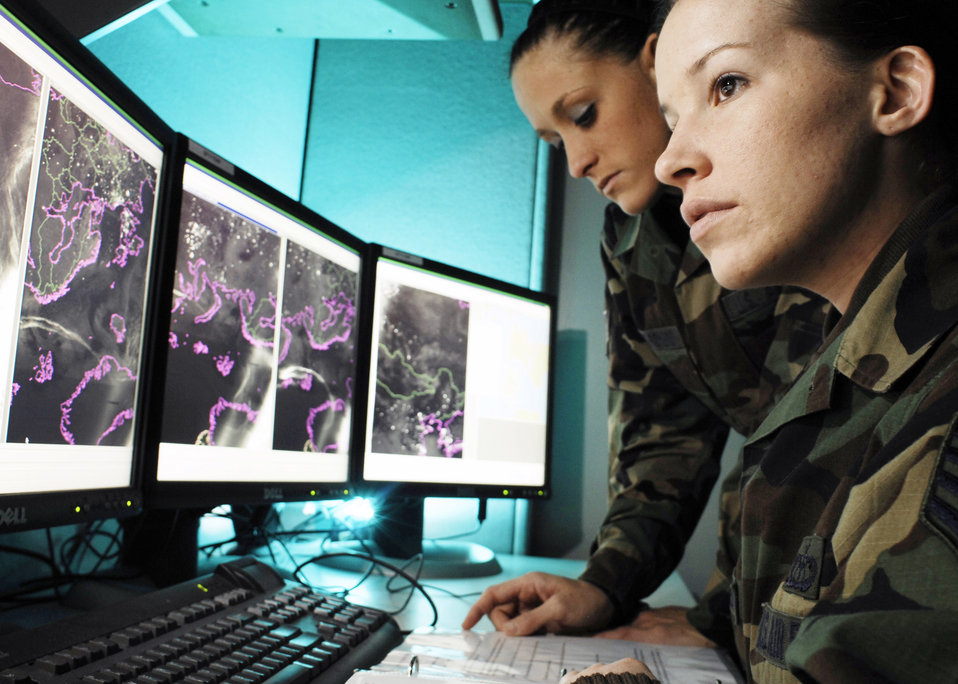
Weather watchers

Staff Sgt. Lindsey Flaugher (front), and Senior Airman Cassandra Napolitano-Romero, go over meteorological satellite imagery Jan. 17 at Offutt Air Force Base, Neb. Sergeant Flaugher is from Wilmington, N.C., and Airman Napolitano-Romero is from Lynchburg, Va. Both are meteorological satellite analysts with the 2nd Weather Squadron.